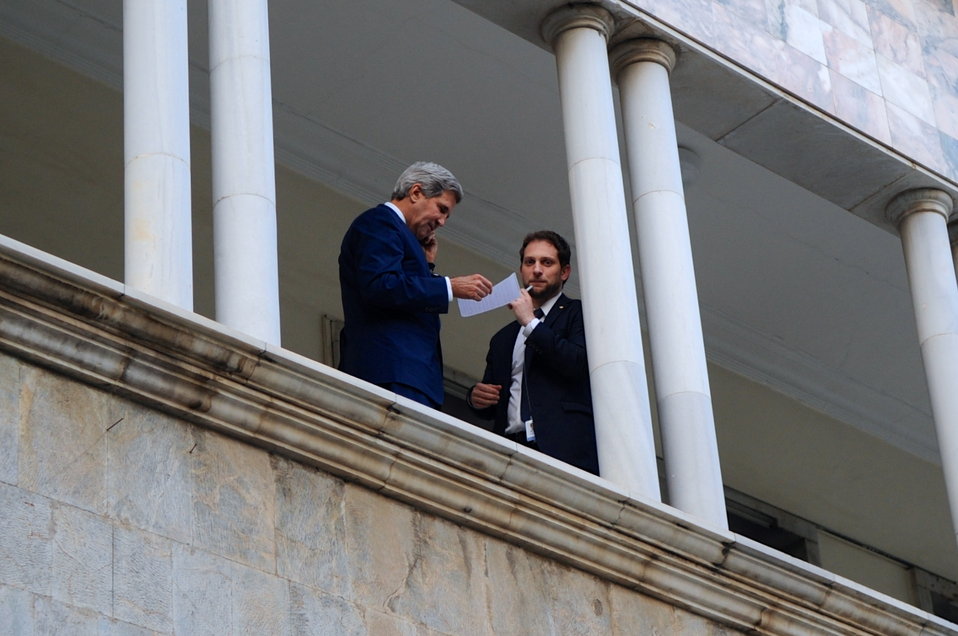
Secretary Kerry Works on Afghan Bilateral Security Agreement

U.S. Secretary of State John Kerry stands with Deputy Chief of Staff Jon Finer on a balcony at Haram Saray Palace in Kabul, during a break in meetings with President Hamid Karzai on October 12, 2013, to discuss a Bilateral Security Agreement.